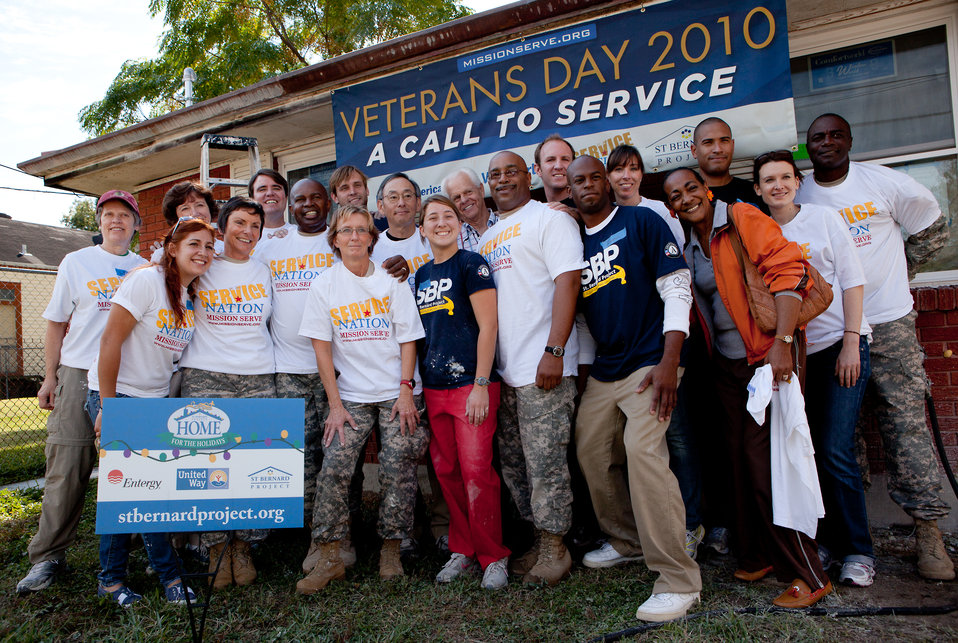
Veteran's Day in New Orleans 10 of 10

Sec. Chu poses with reservists, veterans, and volunteers from Mission Serve and The St. Bernard Project.